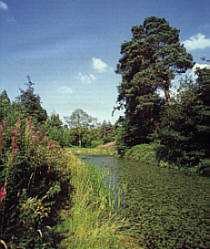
Pic of Cammo canal